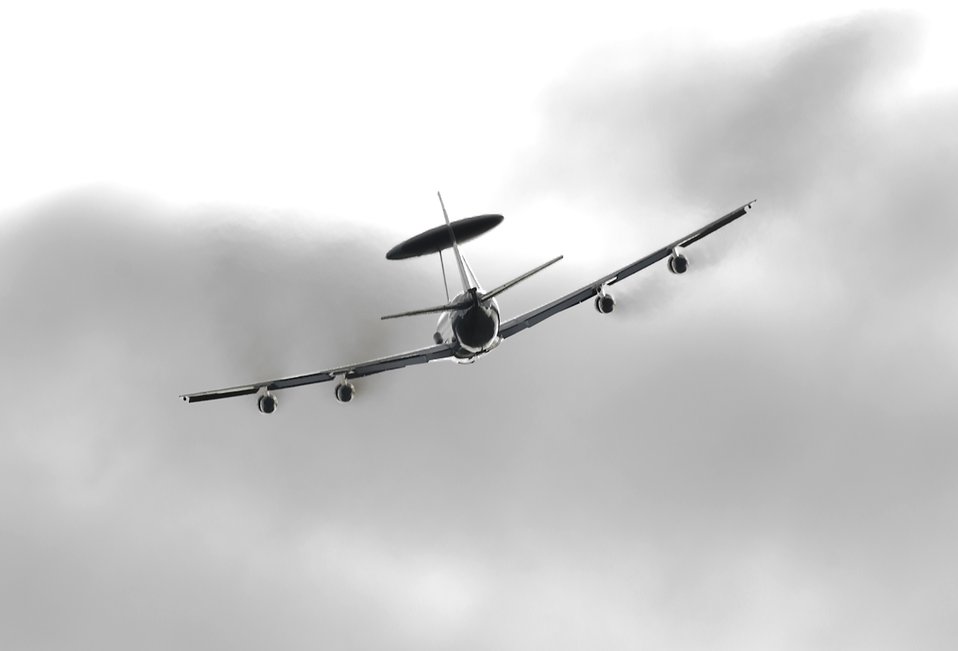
Cooperative Cope Thunder under way

A NATO E-3 Airborne Warning and Control System aircraft takes off July 25 on a mission during Cooperative Cope Thunder. The exercise is underway at Elmendorf and Eielson Air Force bases in Alaska, making use of vast range space Alaska has to offer for aerial training.